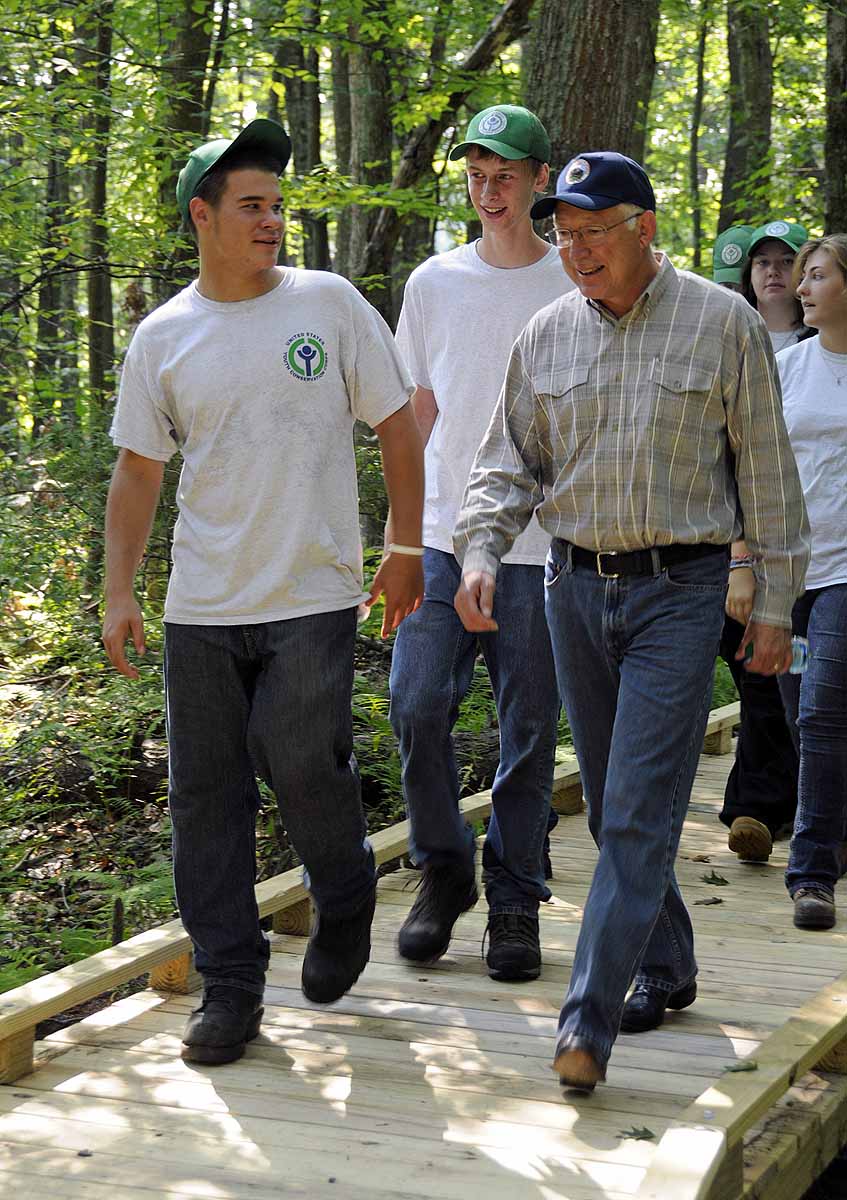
Secretary Salazar visits Great Bay National Wildlife Refuge

Secretary of the Interior Ken Salazar talks with members of the Youth Conservation Corps as they walk the new Upper Peverly Pond Trail boardwalk at Great Bay National Wildlife Refuge. The YCC crew built the boardwalk over the last three summers. Visit occurred on August 19, 2011.